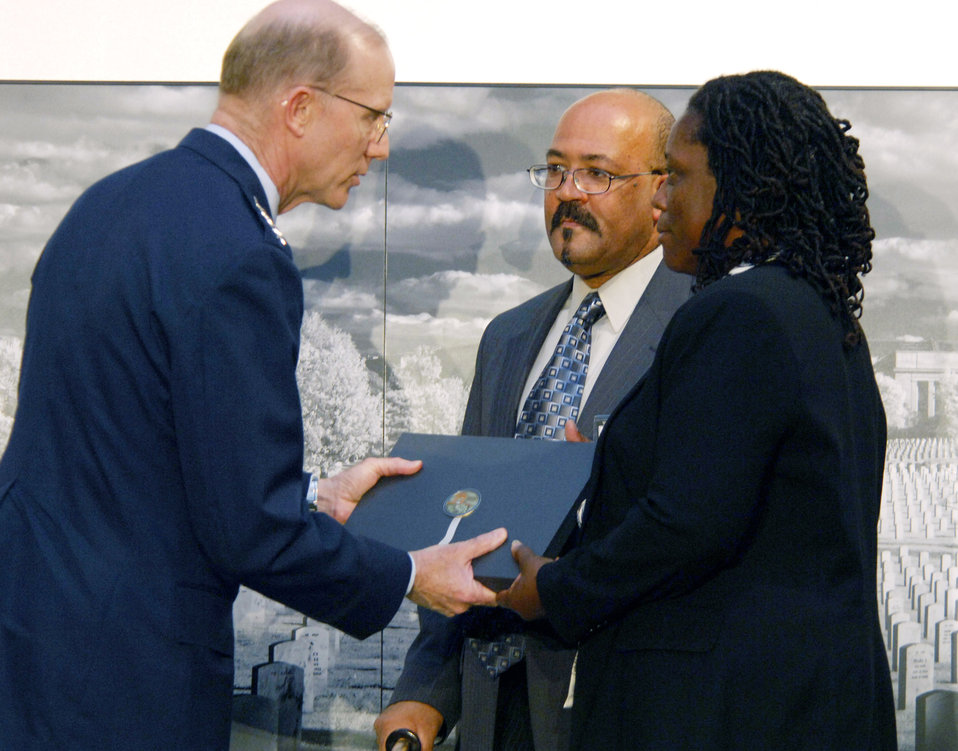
Arlington Book

Air Force Vice Chief of Staff Gen. John D.W. Corley presents a commemorative photo book May 18 to Mike and Jacqueline Chavis, the parents of Airman 1st Class Lee Bernard Chavis, a security forces Airman who was killed in Iraq. The Chavis family represented the Air Force during a book presentation ceremony at Arlington National Cemetery, Va. The book has images from the many funerals that have occurred at Arlington during the fight against terrorism. There were five families at the ceremony who represented each of the service branches.